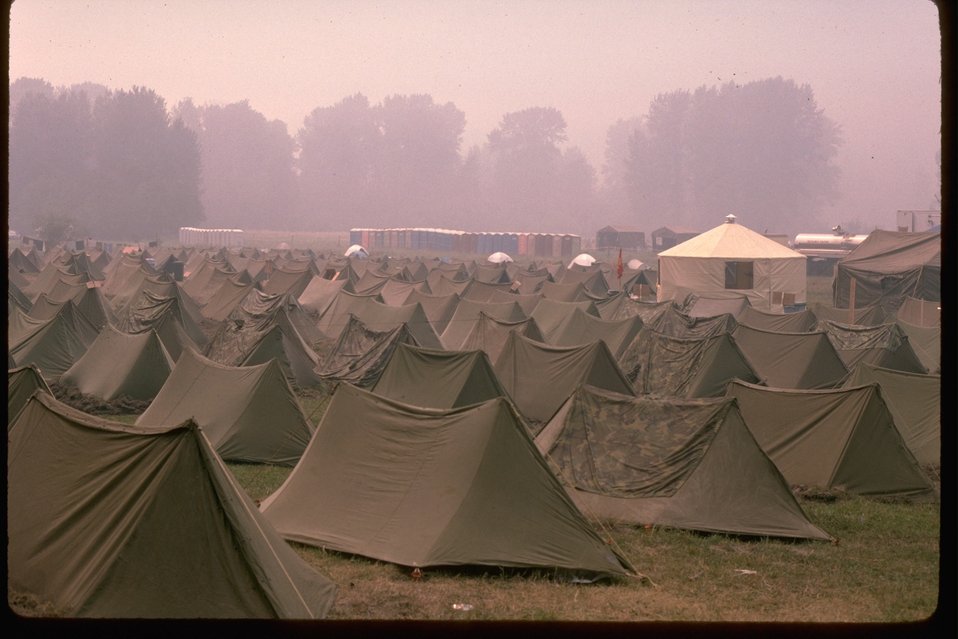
Marine base camp at the 1994 Tyee Fire.